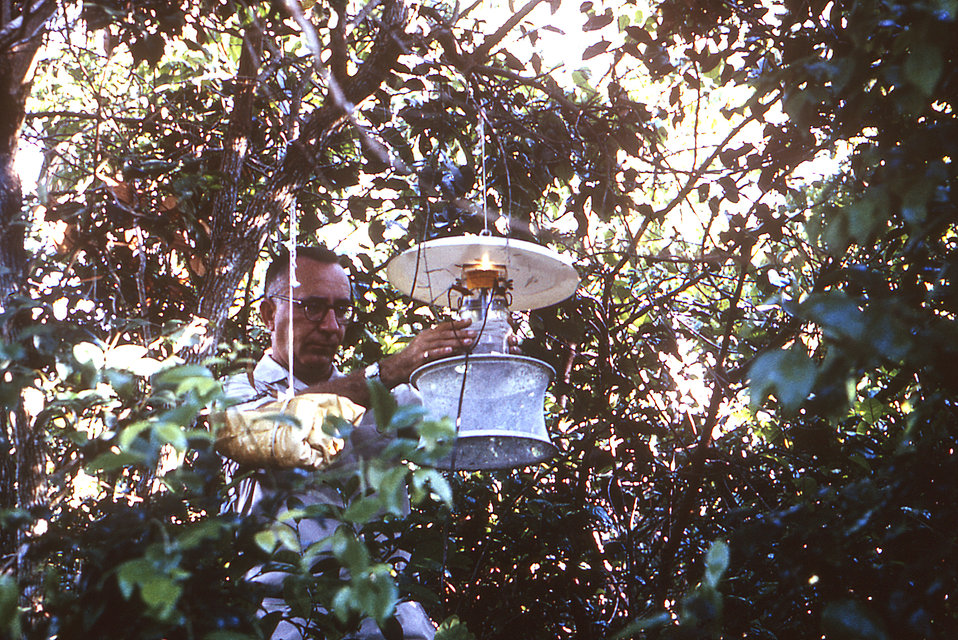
Captured in an unknown woodsy location, this image depicted former Centers for Disease Control (CDC) arbovirologist and entomologist, Dr. William Daniel 'Dan' Sudia, as he was installing an innovative CO2-baited mosquito light trap, which he co-designed with Dr. Roy Chamberlain in 1960 to sample host-seeking female adult mosquitoes.